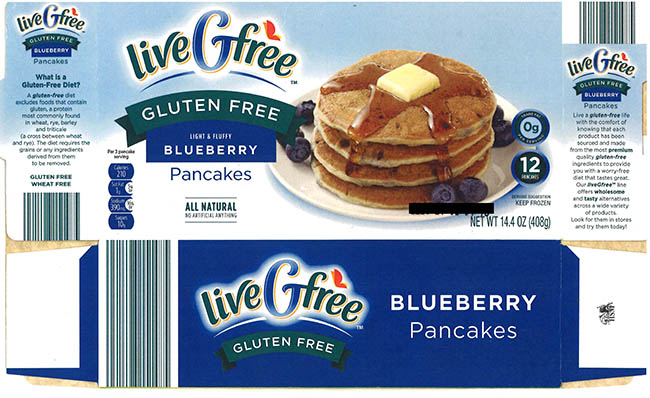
RECALLED – Pancakes

May 15, 2014 – Product Recall – Allergy Alert on Undeclared Milk in Pancakes.